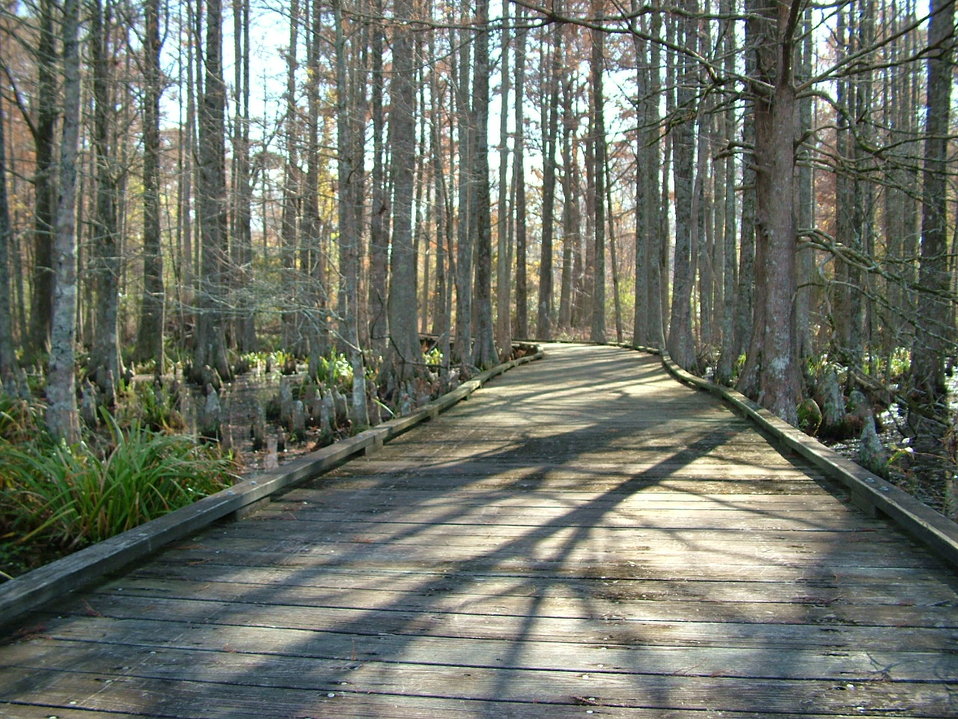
New Holland Trail 3

At Mattamuskeet National Wildlife Refuge.